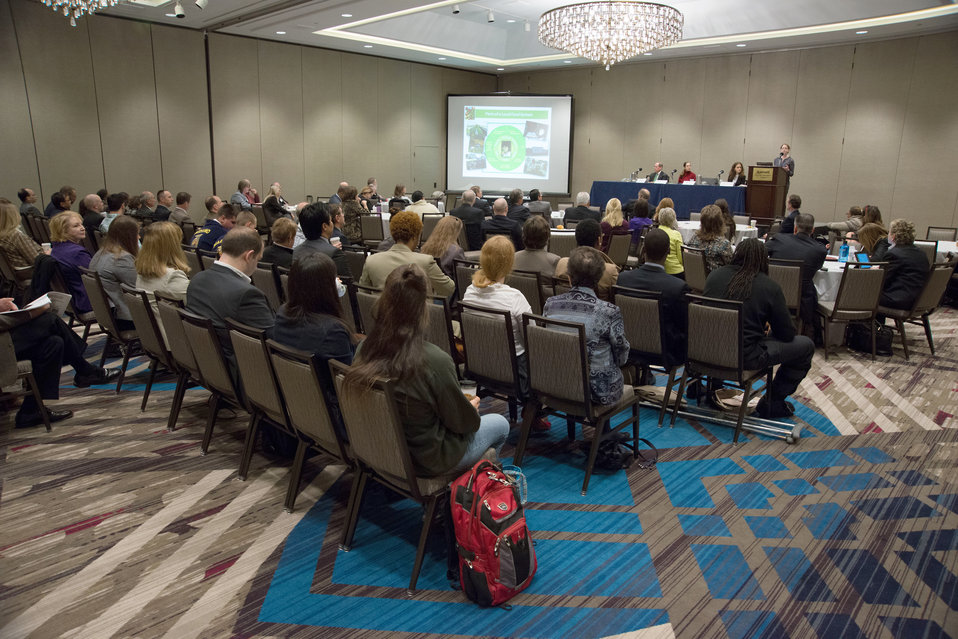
U.S. Department of Agriculture (USDA) Office of the Secretary Local and Regional Food Systems National Coordinator and Advisor Elanor Starmer speaks at the plenary panel on Know Your Farmer, Know Your Food: The Past, Present and Future at the Agricultural Outlook Forum on Friday, Feb. 21, 2014 in Arlington, VA. The panel reviewed the goals and objectives of Know Your Farmer, Know Your Food (KYF2) initiative. The panel spoke about how the initiative works; what has been accomplished to date; how local food systems can use KYF2 and other U.S. Department of Agriculture (USDA) programs to improve the supply, distribution, and demand for local foods; how KYF2 and Federal –State-local partnerships work together to promote local food production and distribution; and highlighted the initiative’s work to grow the local food economy in Appalachia. The U.S. Department of Agriculture’s (USDA) annual Agricultural Outlook Forum brings together the agricultural community to discuss policy, trade, science, rural development, and the economic outlook for the coming year. The Forum also focuses on forestry, health and nutrition issues, and the changing dynamics and face of rural America.